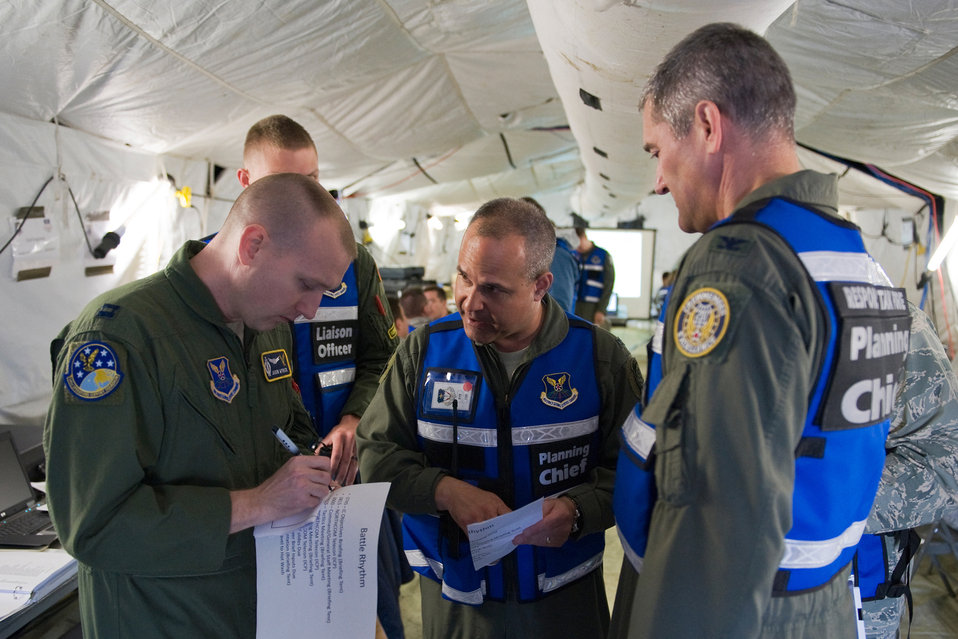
Global Strike Command Airmen respond to incident scenario

Col. Mohammed Khan discusses an exercise scenario with Capt. David Wyrick as Col. Paul Gydesen looks on during a four-day multi-faceted exercise June 1 through 4, 2010, at Malmstrom Air Force Base, Mont. Colonel Khan is the 341st Operations Group commander. Captain Wyrick is with the 341st Operations Support Squadron. Colonel Gydesen is the Air Force Global Strike Command deputy director for Plans, Programs and Requirements.